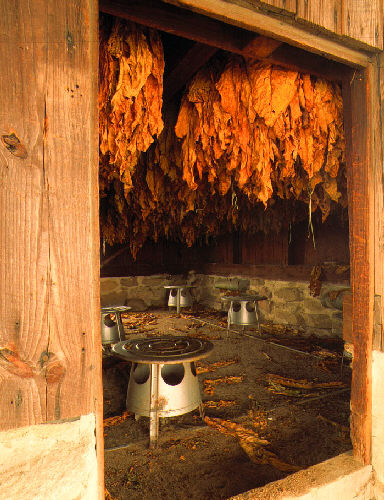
Tobacco hanging in curing shed.